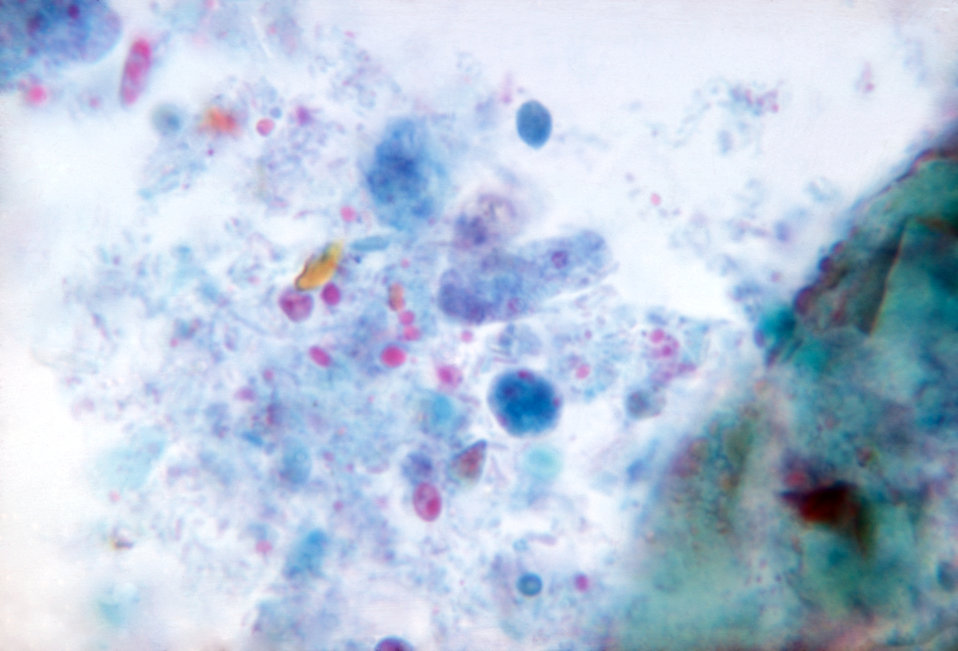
Dientamoeba fragilis. Trichrome stain. Parasite, ameba.